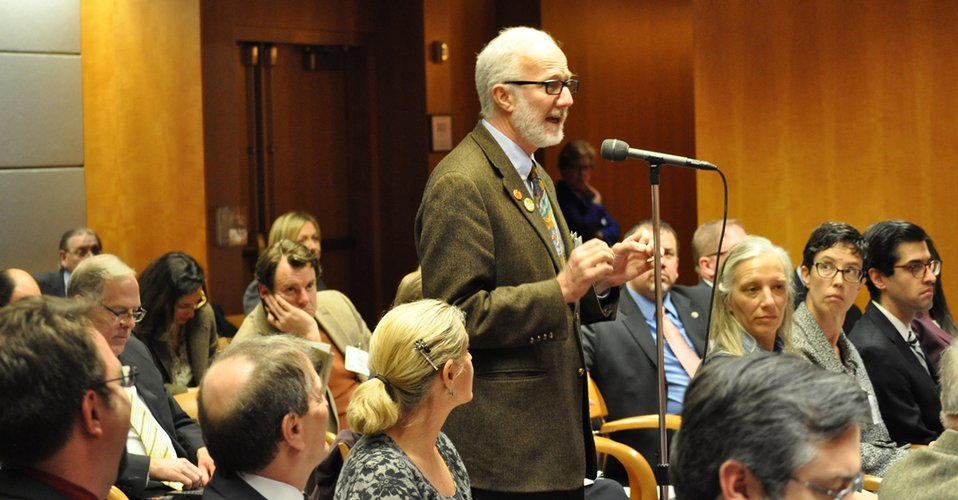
Rural Broadband Workshop: March 19, 2014

Audience Question